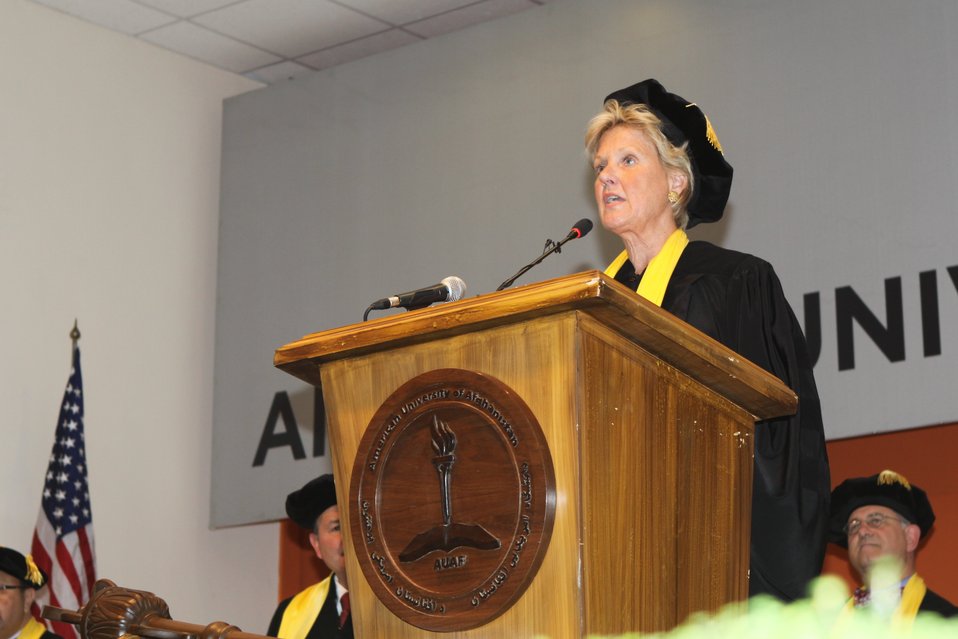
100526 AUAF Graduation 161